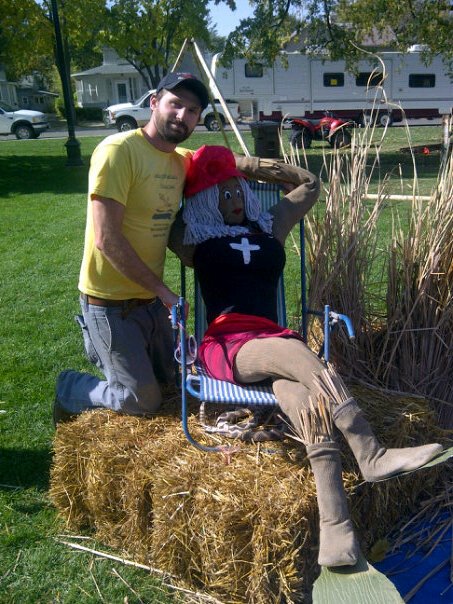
2011 Scarecrow Festival

Bio tech Justin Dupey posing with our lovely lifeguard.